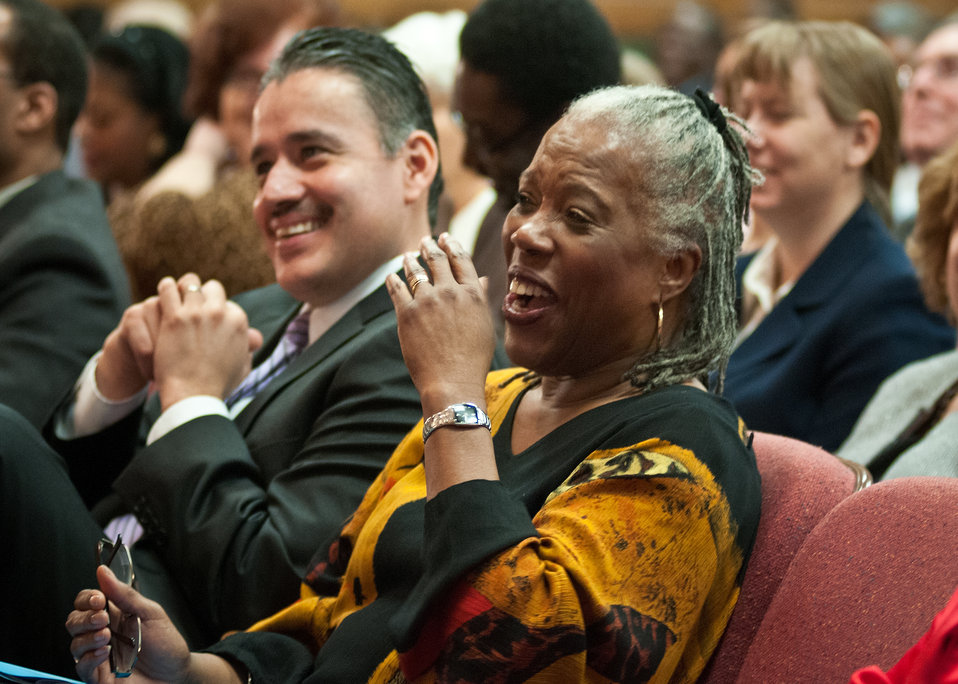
Oscar Gonzales (left), Deputy Assistant Secretary for Administration and Audrey Rowe (right), Administrator, Food and Nutrition Service listen to Tim Reid, Actor, Comedian, Filmmaker and Social Activist the guest speaker at the United States Department of Agriculture Black History Month celebration “Black Women in American Culture and History” in Washington, D.C. on Thursday, February 16, 2012. Reid brought the house down at times with his humor.